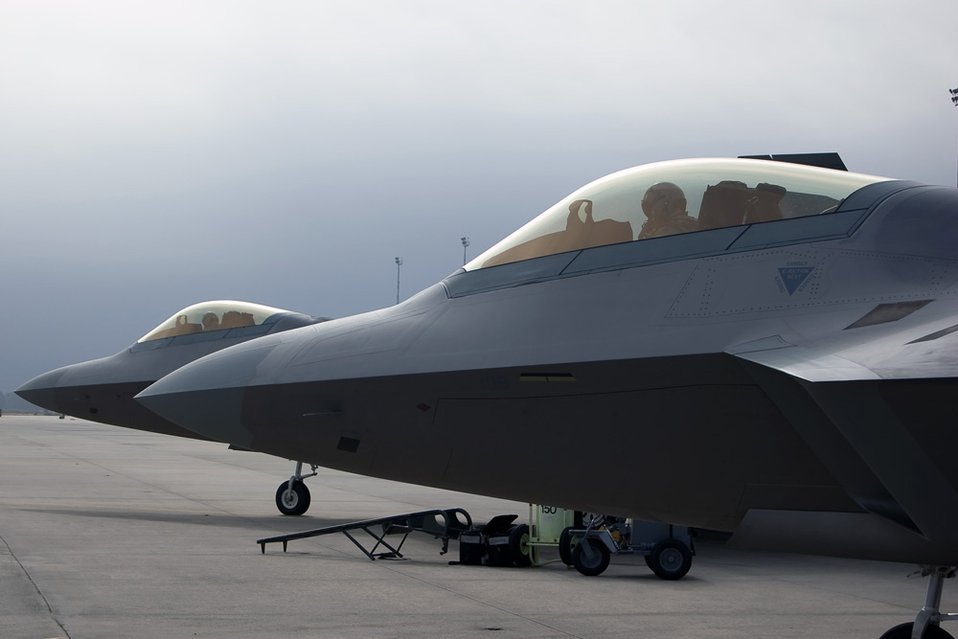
Elmendorf Airmen complete first F-22 deployment

F-22 Raptors prepare for takeoff Feb. 4 at Tyndall Air Force Base, Fla. Members of the 3rd Wing and Air Force Reserve Command's 477th Fighter Group from Elmendorf AFB, Alaska, combined for its first F-22 Raptor deployment to Tyndall AFB for Combat Archer. The 132 Reserve and active-duty Airmen and eight F-22s from Alaska were in Florida for Weapons System Evaluation Program training.